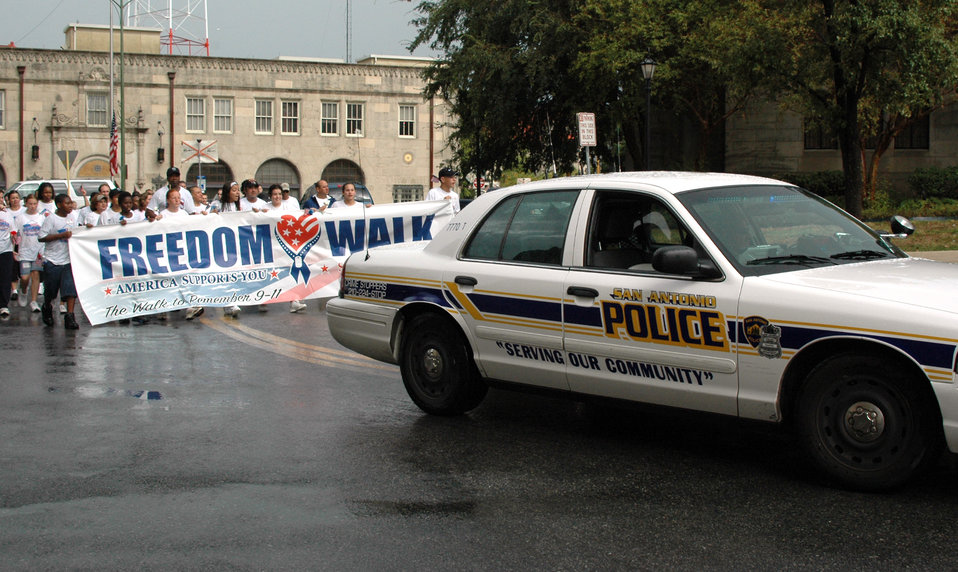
Rain doesn't stop San Antonio's Freedom Walk

A patrolman from the San Antonio Police Department clears the way for the more than 1,200 servicemembers, civilians and children who braved the rain to participate in the America Supports You Freedom Walk Sept. 11 to pay tribute to those who died on Sept. 11, 2001.